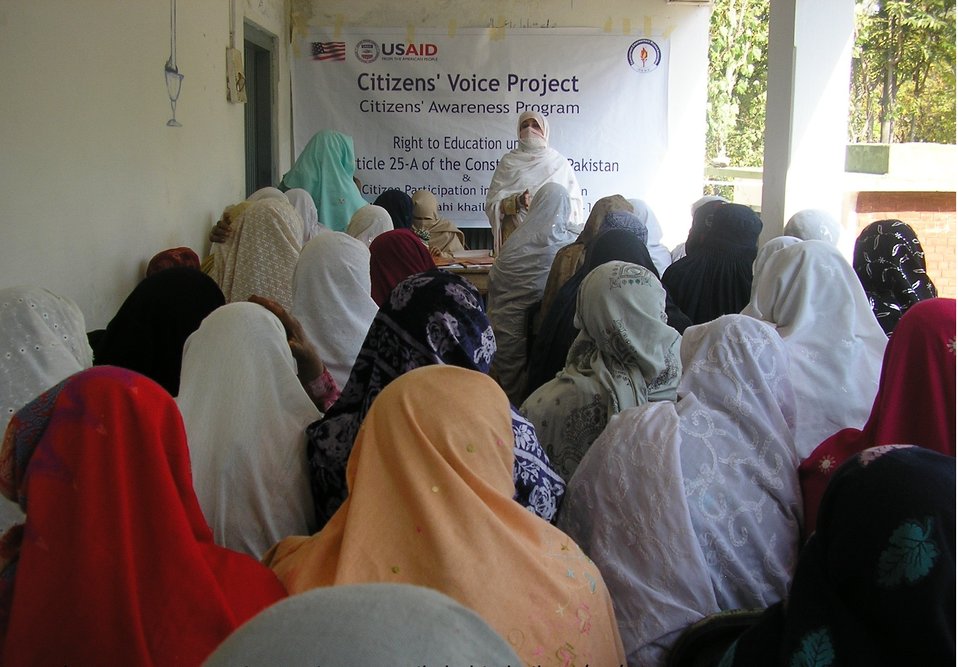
Caption 11 - DEWA - Dir KP - Meeting the Women of the Community on Right to Education

A social organizer of the Development Empowerment Women Association (DEWA) orients a gathering of local women on the right to education as stated in the 18th Constitutional Amendment. DEWA is a civil society organization implementing a project on Education Sector Reforms in Dir Lower, Khyber Pakhtunkhwa, under USAID’s Citizens’ Voice Project.